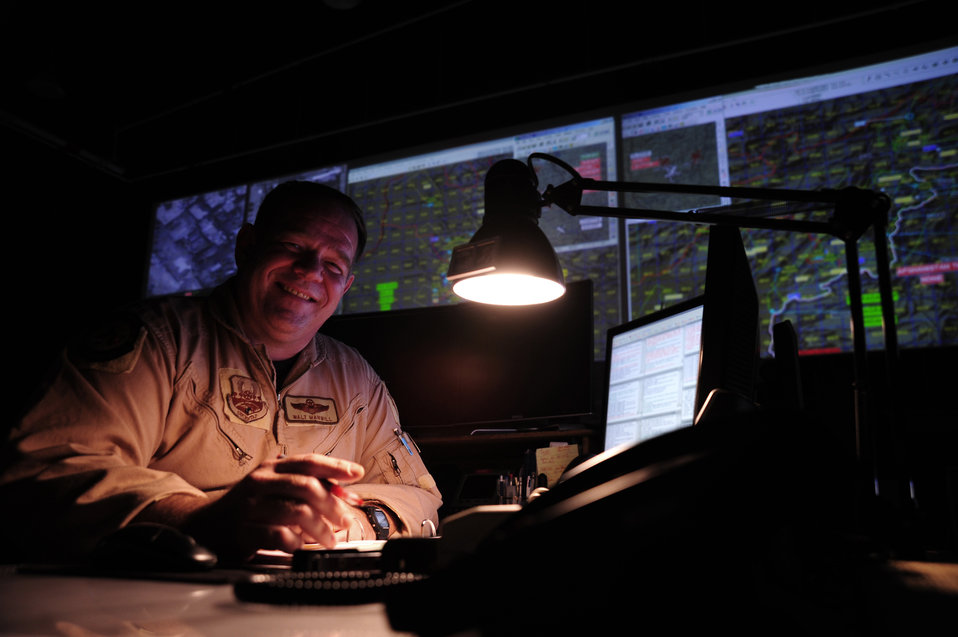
Combat Operations Director

As the Combined Air and Space Operations Center, Director of Combat Operations Division, Lt. Col Walter Manwill is responsible for ensuring that the men and women deployed under his command in the AOR have the equipment, training, processes, and procedures in order to execute the Air Tasking Order.